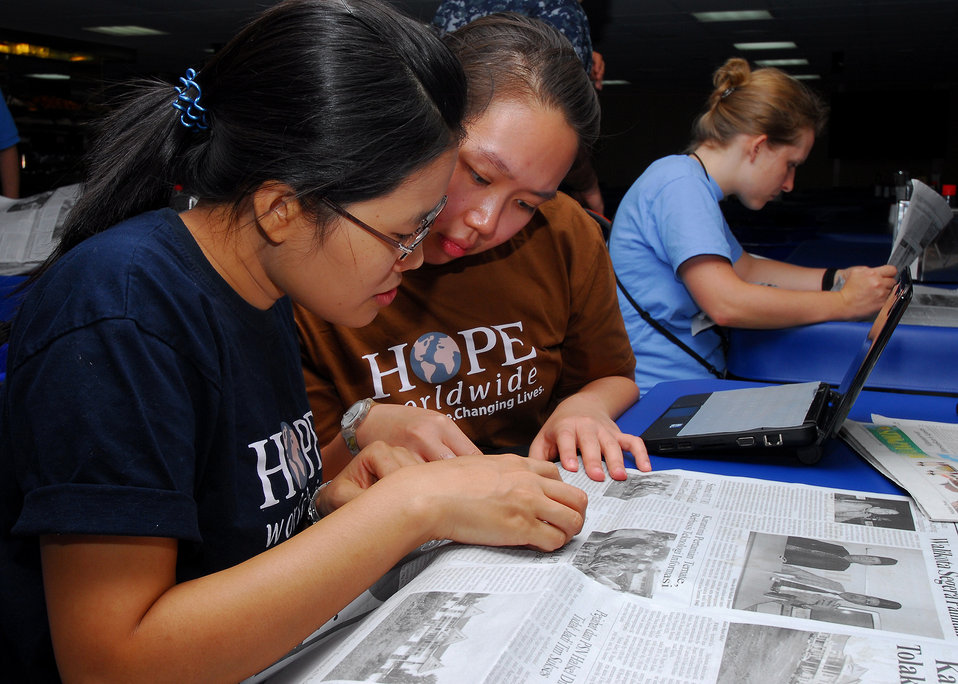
HOPE Worldwide Members Tan and Dewi Translate Indonesian Newspapers

HOPE worldwide members Lea Sutrisna Tan (left) and Nani Kumala Dewi translate Indonesian newspapers during the Military Sealift Command hospital ship USNS Mercy’s (T-AH 19) transition through Indonesia on July 25, 2010. Mercy is in the North Maluku Islands conducting Pacific Partnership 2010, the fifth in a series of annual U.S. Pacific Fleet endeavors conducted in Indonesia as a disaster relief exercise aimed at strengthening regional partnerships.